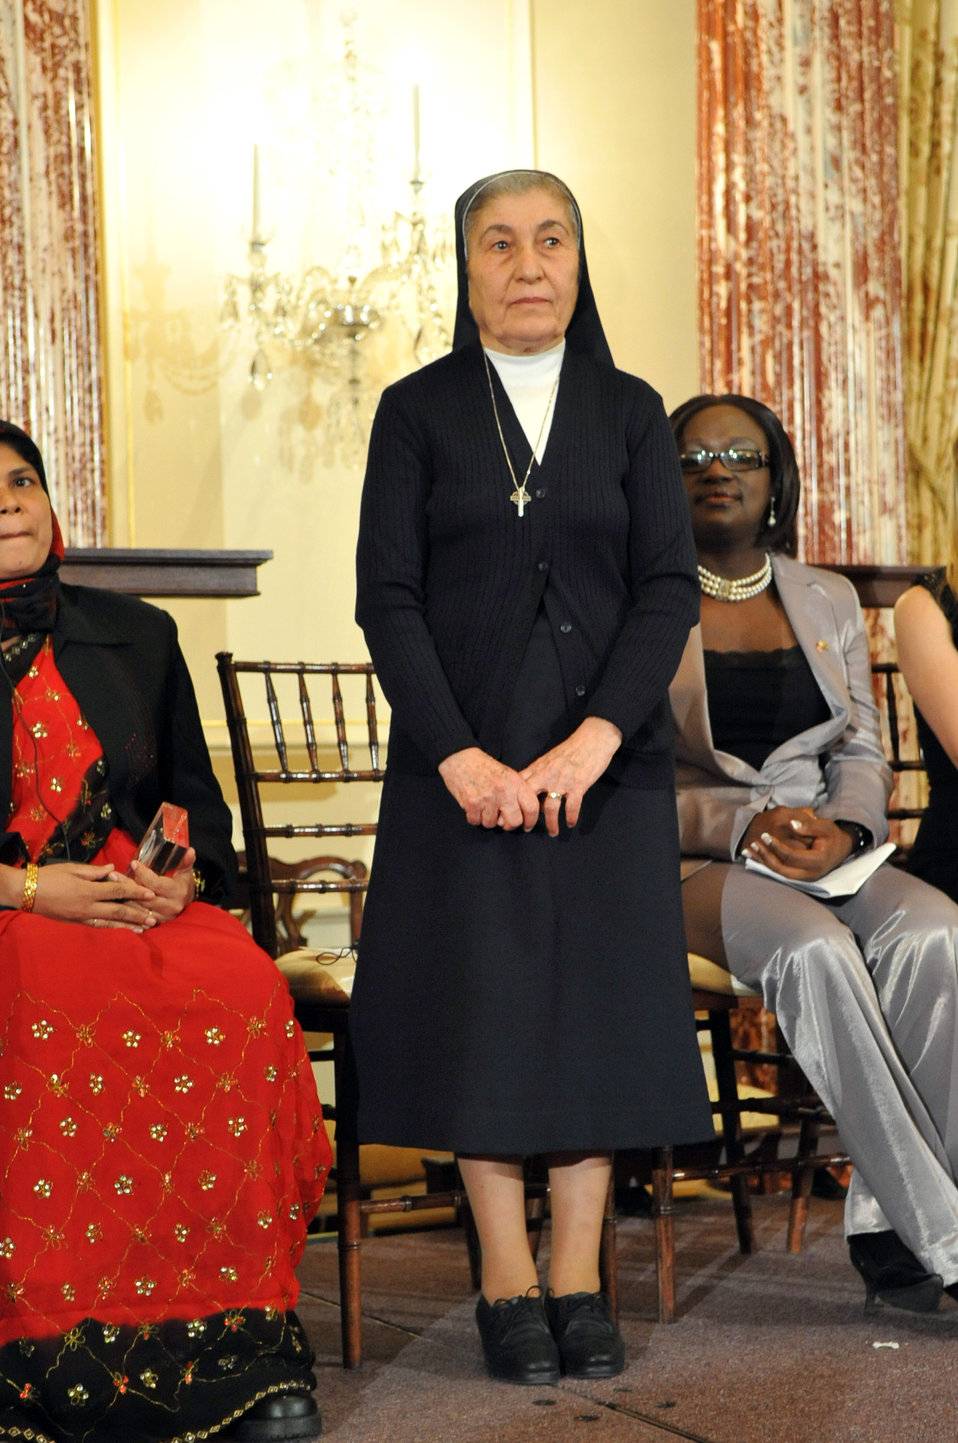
Sister Marie Claude Naddaf of Syria stands as she is recognized at the 2010 International Women of Courage Awards at the U.S. Department of State, Washington, D.C. March 10, 2010.